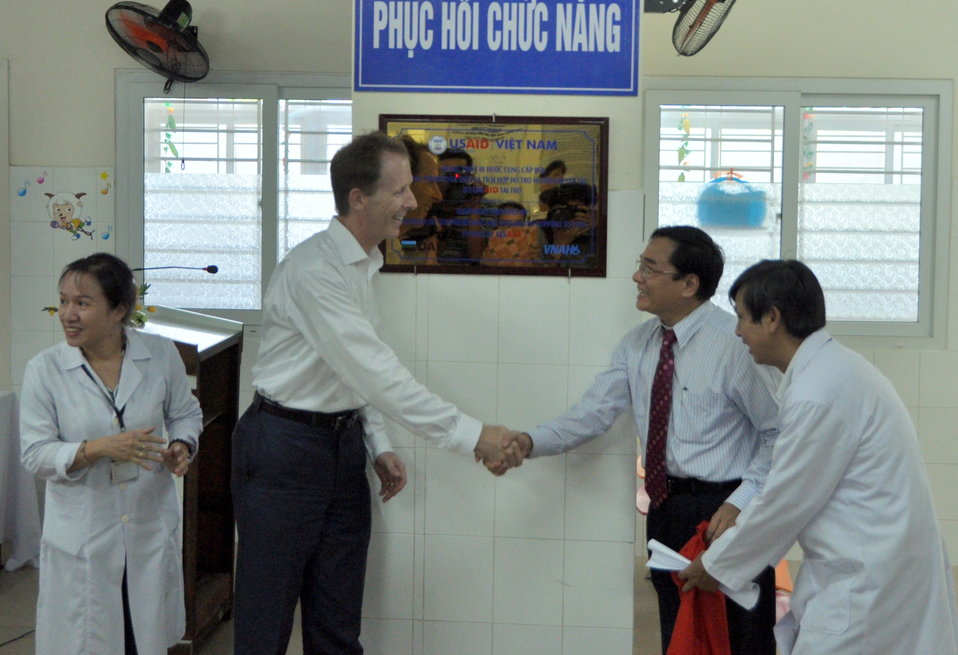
USAID Mission Director Joakim Parker and USAID Partners Join to Open Rehabilitation Department at Women's and Children's Hospital of Danang

July 16, 2013